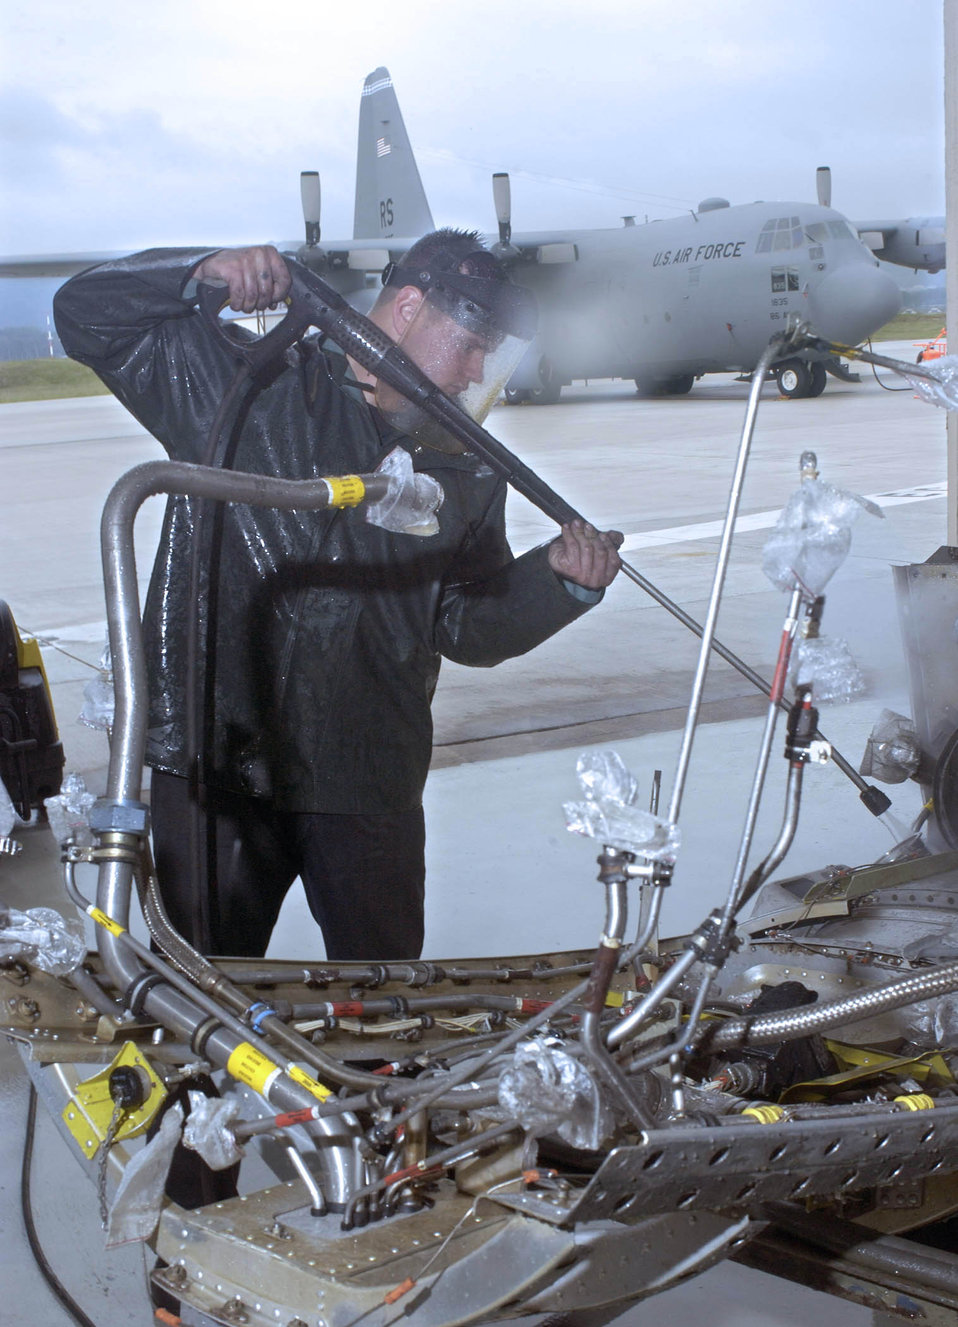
Herculean engine

RAMSTEIN AIR BASE, Germany -- Senior Airman Tyler Kehm uses high-pressure water spray to clean a section of a C-130 Hercules engine. The 86th Maintenance Squadron's propulsion flight here is the focal point for any C-130 engines needing repairs in Europe or those deployed supporting operations Iraqi Freedom and Enduring Freedom.